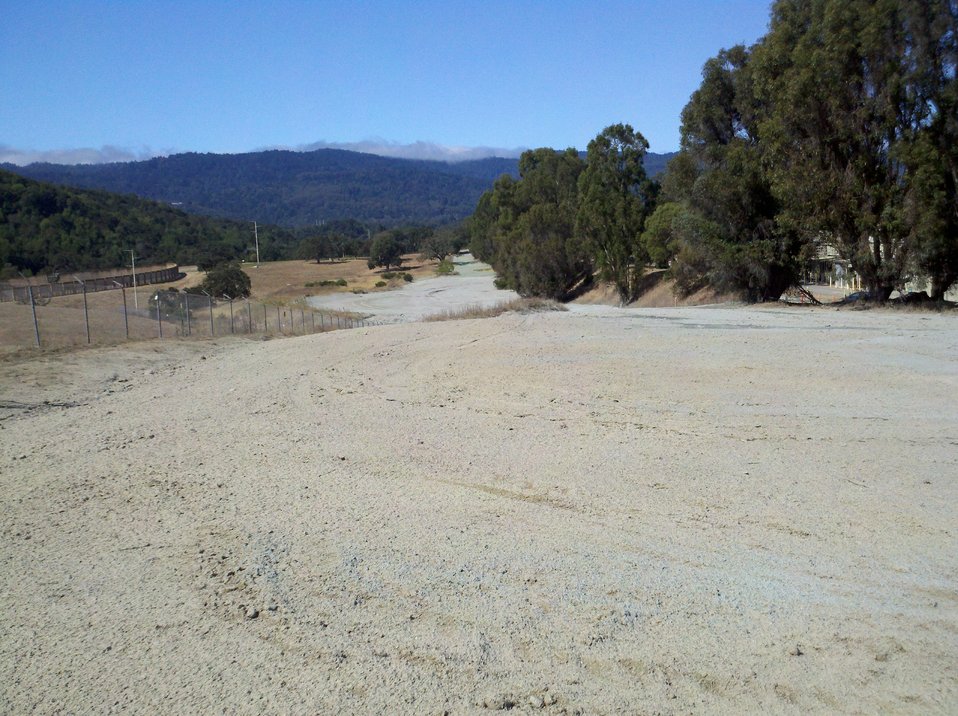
SLAC landfill cleanup

These photos show the Clean Landfill, the site of the largest Recovery Act-funded soil and debris removal project at the SLAC National Accelerator Laboratory, before and after cleanup.